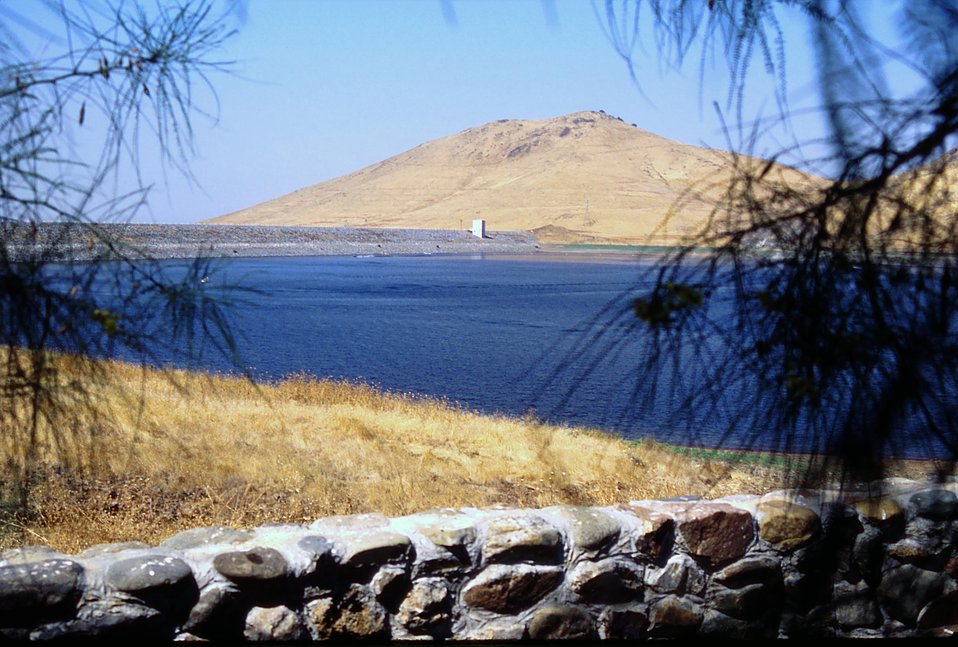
Success Dam

Looking southwest across Success Lake toward Success Dam, located near Porterville, Calif., Nov. 8, 2004. The U.S. Army Corps of Engineers Sacramento District completed construction of Success Dam in 1961 and the reservoir provides flood risk management, water storage and recreational benefits to the local area.